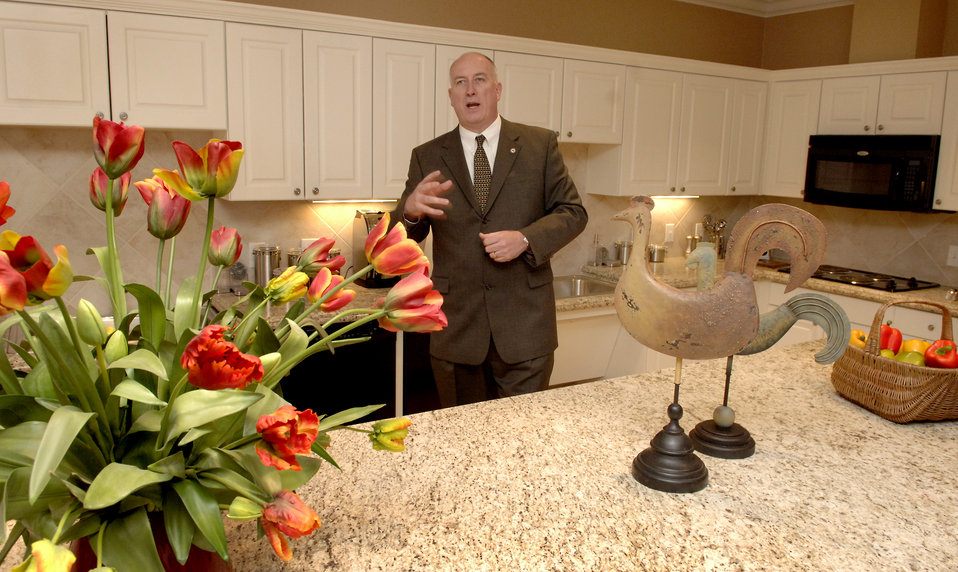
Center for Intrepid

Dave Coker, president of the Fisher House Foundation, shows off the communal kitchen at one of the new 16,800-square-foot Fisher House facilities adjacent to the Center for the Intrepid in San Antonio Jan. 29. Each Fisher House can accommodate 21 families.